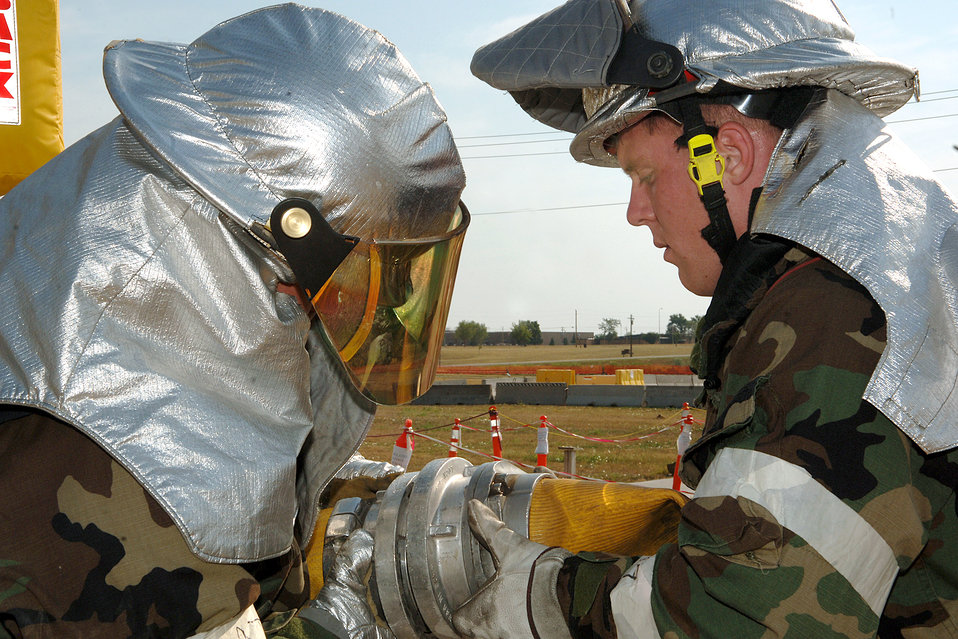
Fired up

Airmen from the 28th Civil Engineer Squadron disassemble a water hose after a simulated fire at Ellsworth Air Force Base, S.D., on July 19. The scenario was part of an operational readiness inspection.